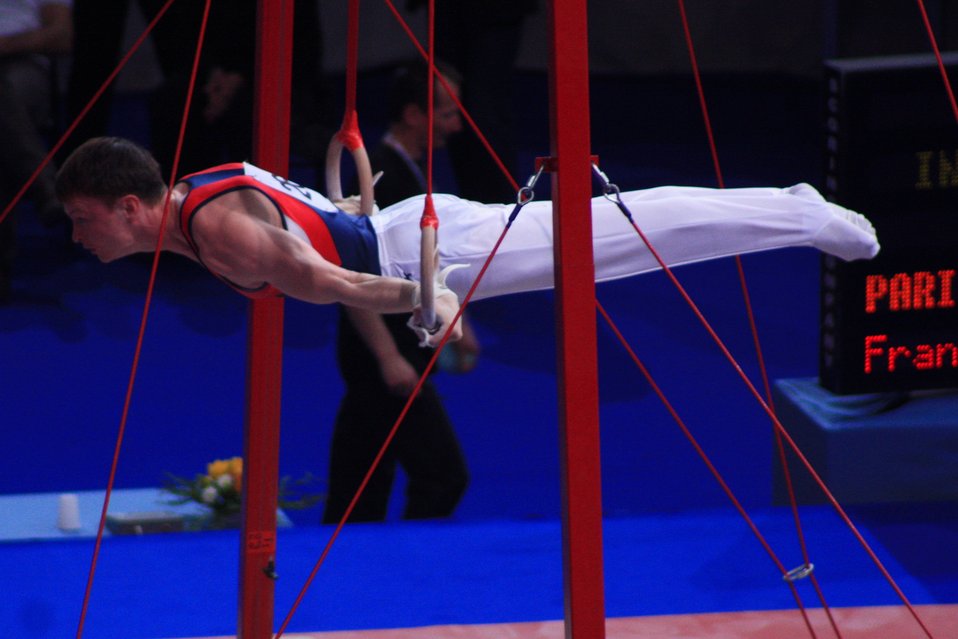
Fran√ßais†: Anton Fokin lors des qualifications aux anneaux des 17e Internationaux de France en 2010.